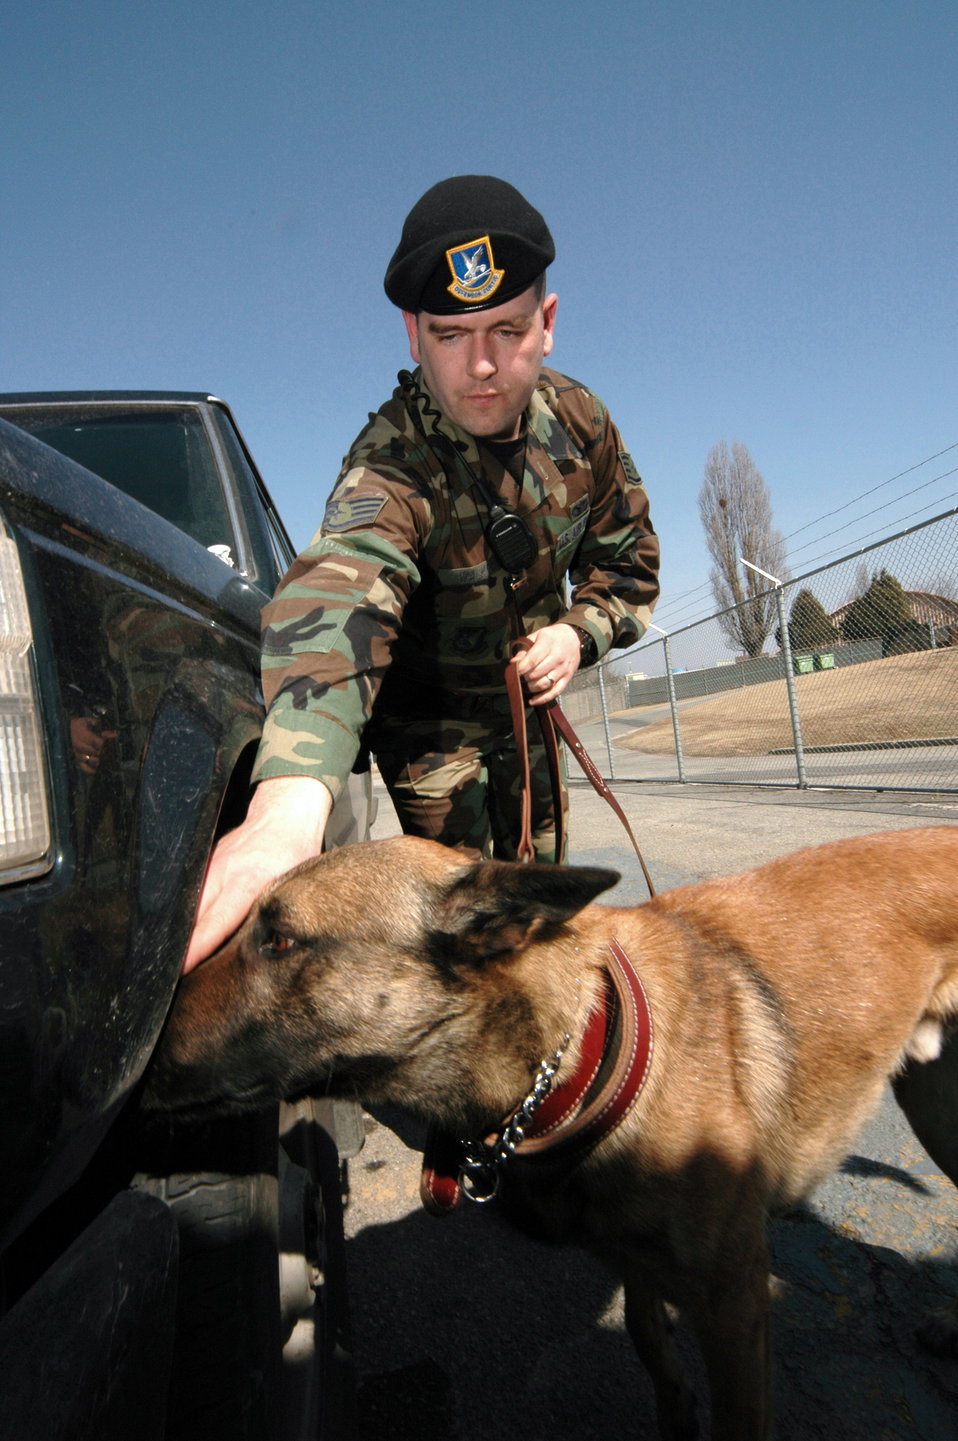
Military dogs dig into security

OSAN AIR BASE, South Korea -- Staff Sgt. Ryan Walker searches a vehicle for contraband with his partner Ffischer [sic] here. Sergeant Walker is a 51st Security Forces Squadron military working dog handler. The dogs are highly trained to obey specific commands and for multiple tasks. The military working dog kennel here is the largest operational kennel in the Air Force.